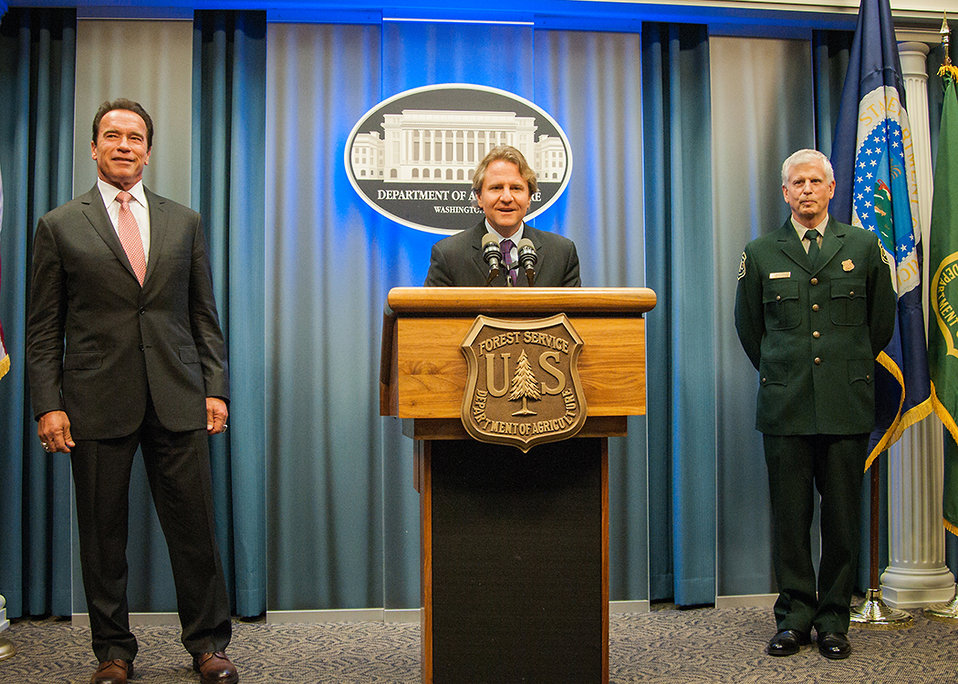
From left: Governor Arnold Schwarzenegger, Leo Kaye, Director, U.S. Forest Service, Office of Communications and U.S. Forest Service Chief Tom Tidwell during an event honoring Gov. Schwarzenegger held at the U.S. Department of Agriculture in Washington, D.C. Wed., Oct. 29, 2013.